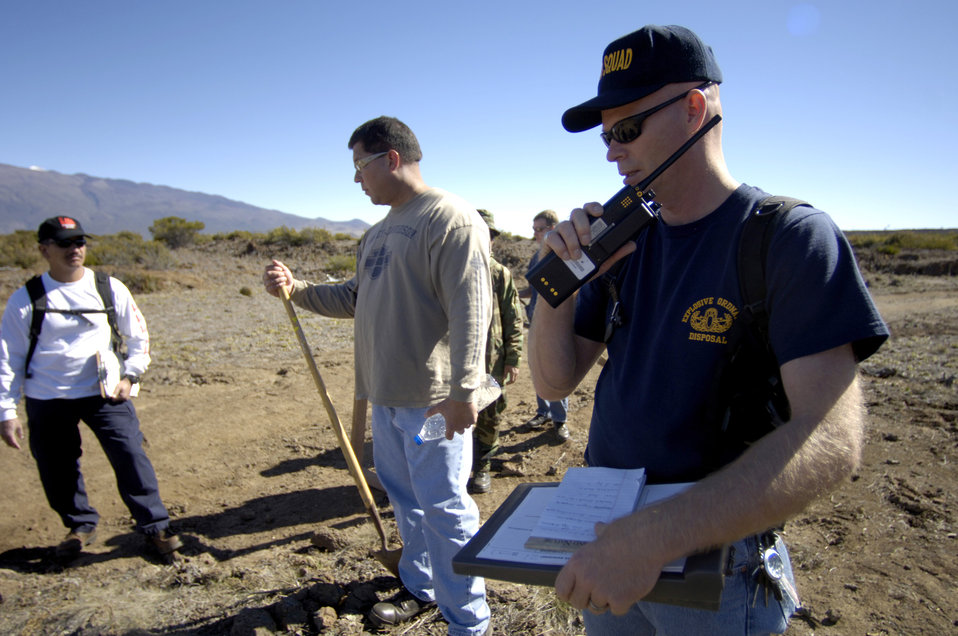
Air Force attends FBI training

POHAKULOA TRAINING AREA, Hawaii (AFPN) -- Master Sgt. James Skyberg contacts the command post before leading his team into a bomb scene scenario. The FBI, along with Army cadre, conducted a large vehicle post blast investigator's course here. It included instruction on investigative techniques and evidence collection. Sergeant Skyberg is with the 15th Civil Engineer Squadron explosive ordinance disposal flight at Hickam Air Force Base, Hawaii.